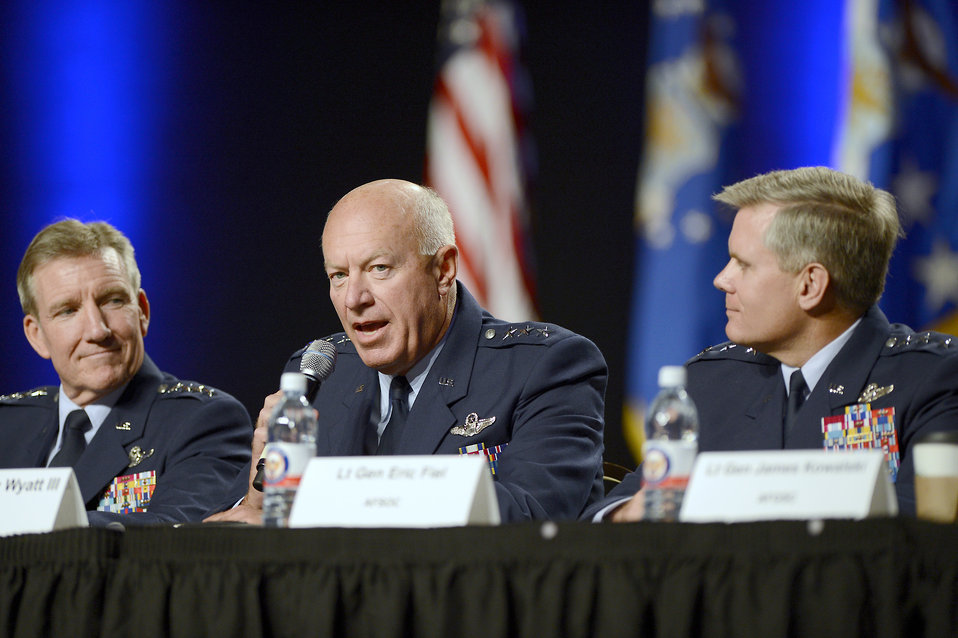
Air Force leaders offer perspectives at four-star forum

Lt. Gen. Harry Wyatt III, director of the Air National Guard, takes questions during a 12-member senior leader panel at the Air Force Association's Air and Space Conference and Technology Exposition in Washington, D.C., Sept. 19, 2012.